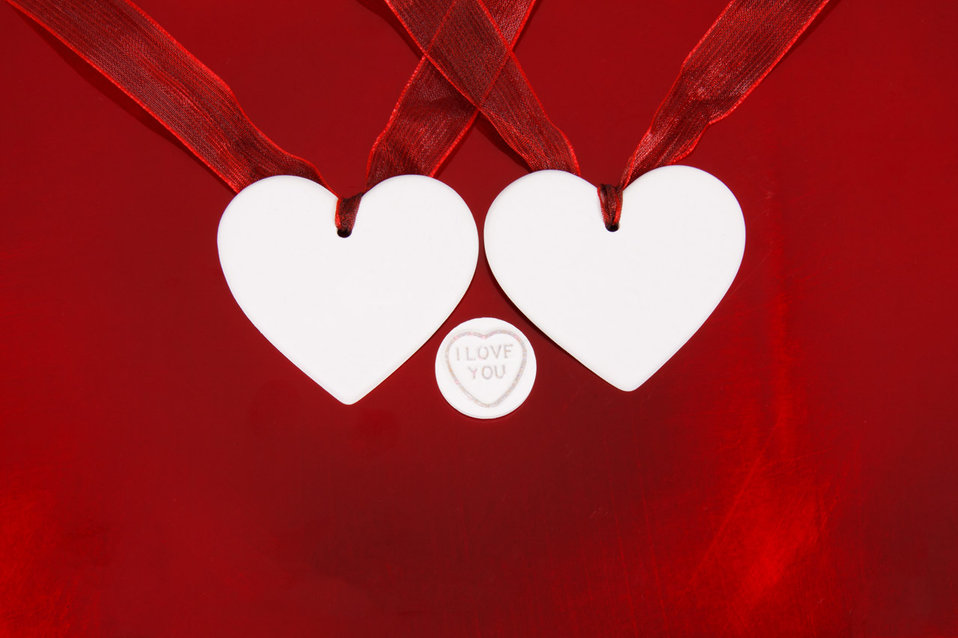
Hearts on red background

Two white hearts and one candy heart on red background.